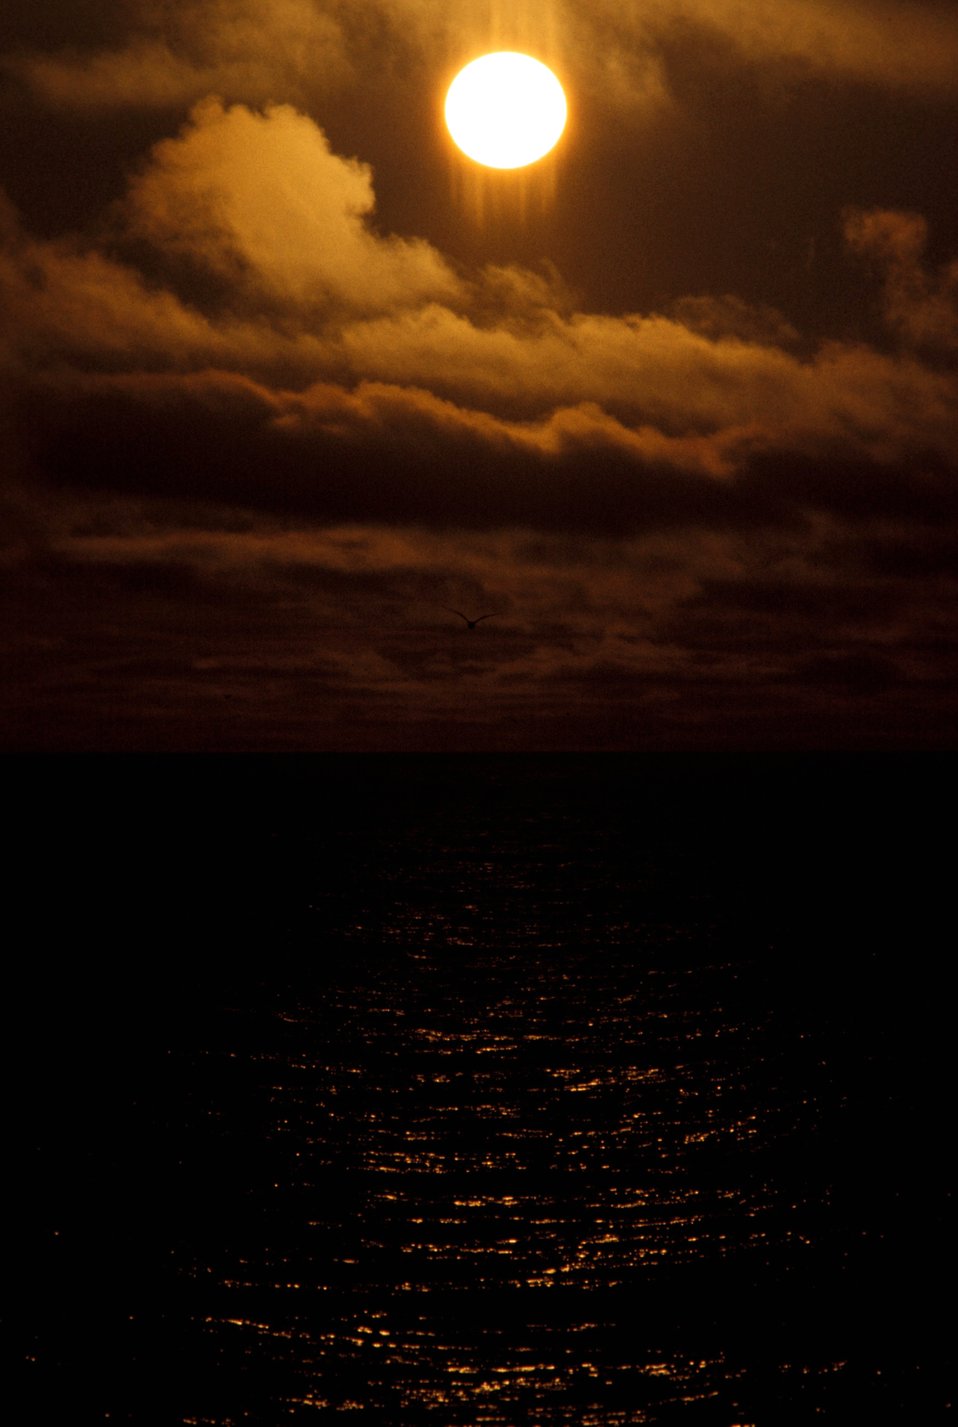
A Bering Sea sunset